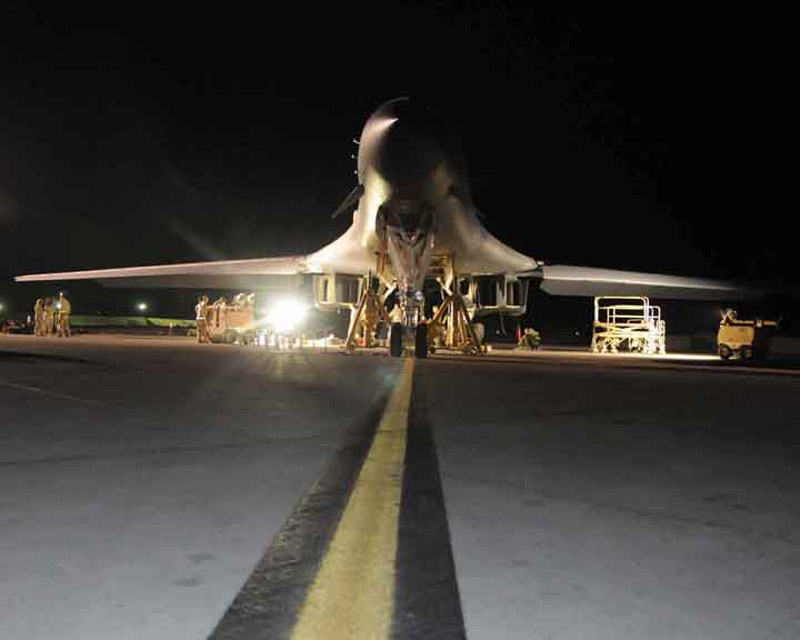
Nocturnal workers

A B-1B Lancer is jacked and ready for repairs by the 37th Aircraft Maintenance Unit maintainers May 29 in Southwest Asia. The maintainers use industrial lights to illuminate their workspace during the night hours.